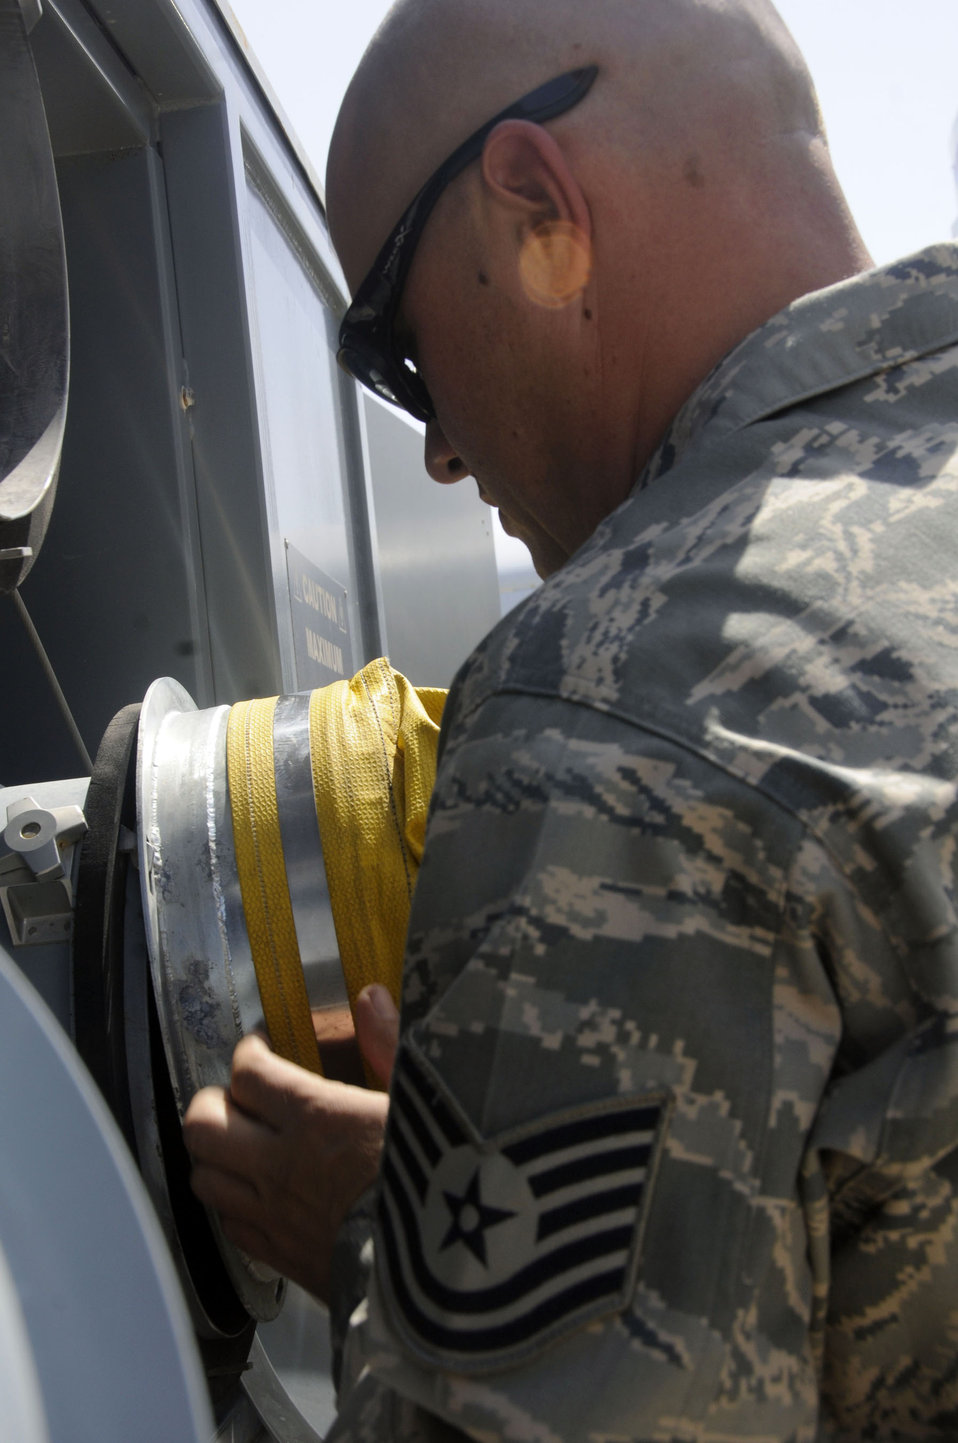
Robins officials help fix vital warfighters' equipment issue

Tech. Sgt. Jason Blurton attaches a duct to a 110-ton flightline diesel air conditioner that provides conditioned air for ground testing of aircraft at Robins Air Force Base, Ga. Sergeant Blurton is assigned to the 642nd Combat Sustainment Group.